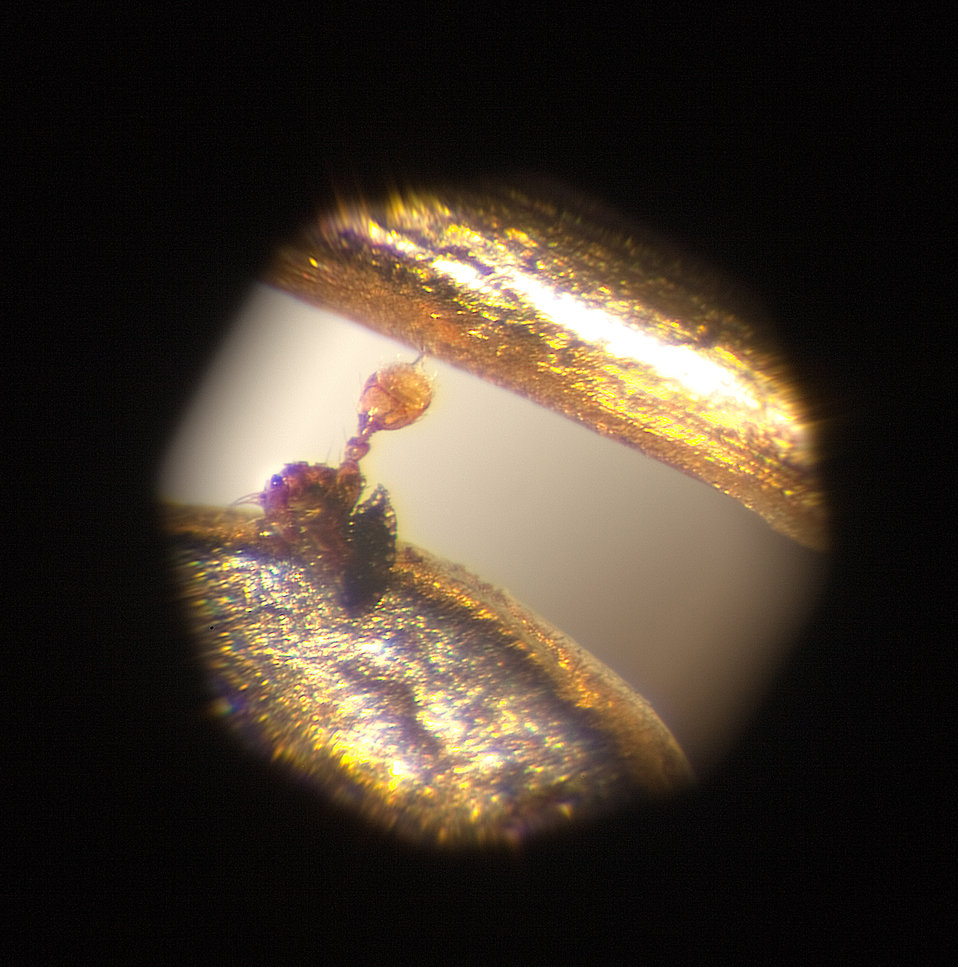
Microscopic view of a redbay ambrosia beetle antenna mounted between gold wire electrodes of an electroantennography system on May 22, 2012. The antennae are exposed to different attractants to determine which ones the insect most readily detects.